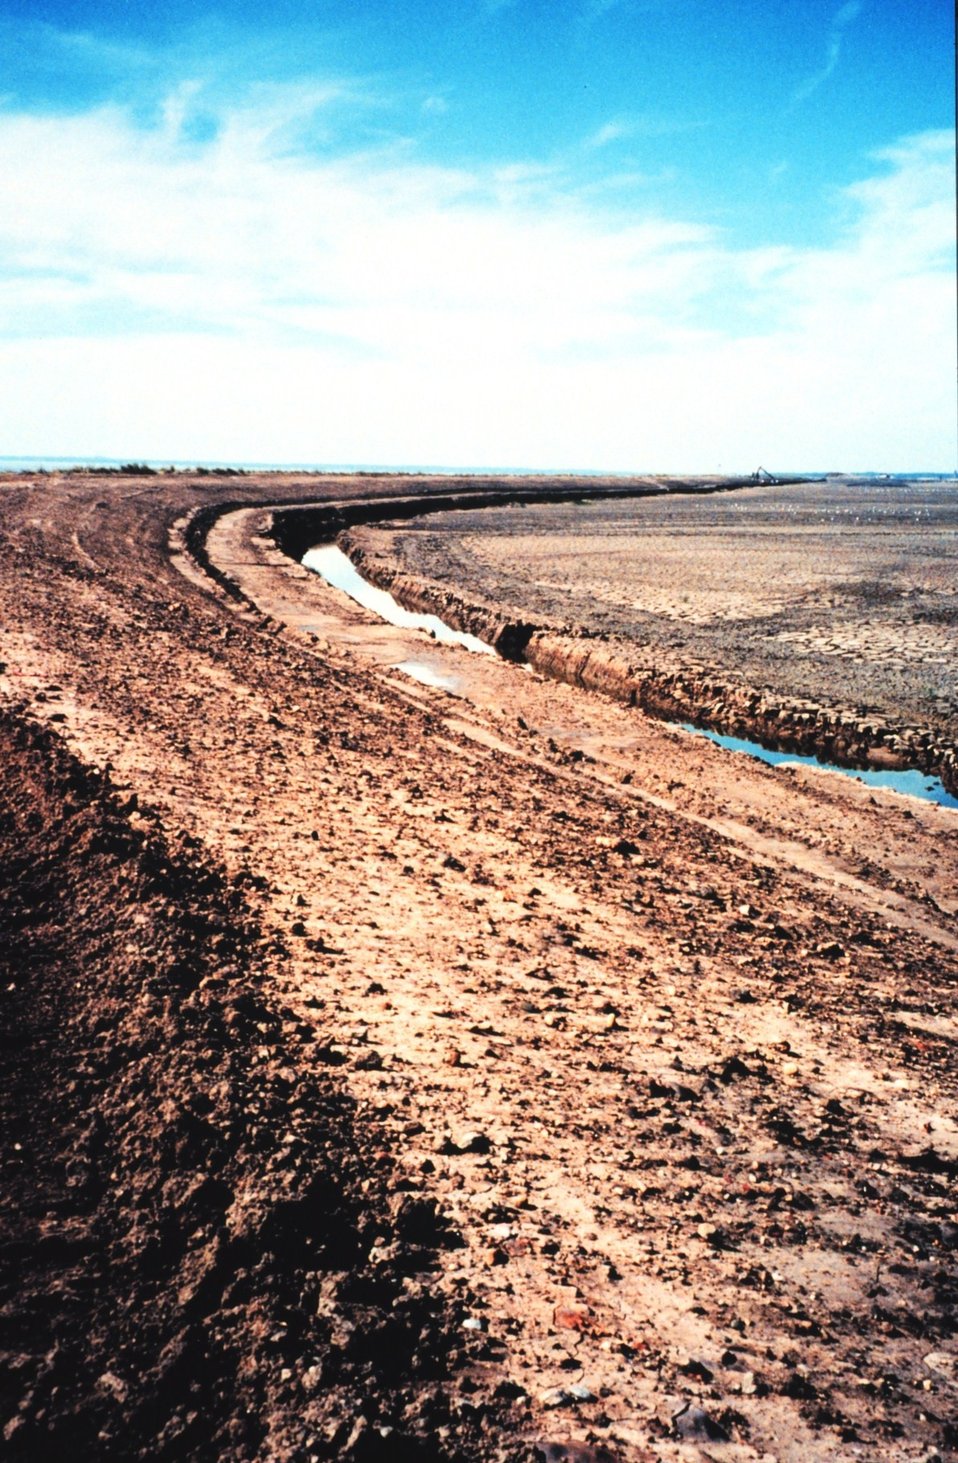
Hart-Miller Island, once two islands that nearly eroded into extinction, are now one. They are being regenerated and enlarged with dredge spoils from Baltimore Harbor.